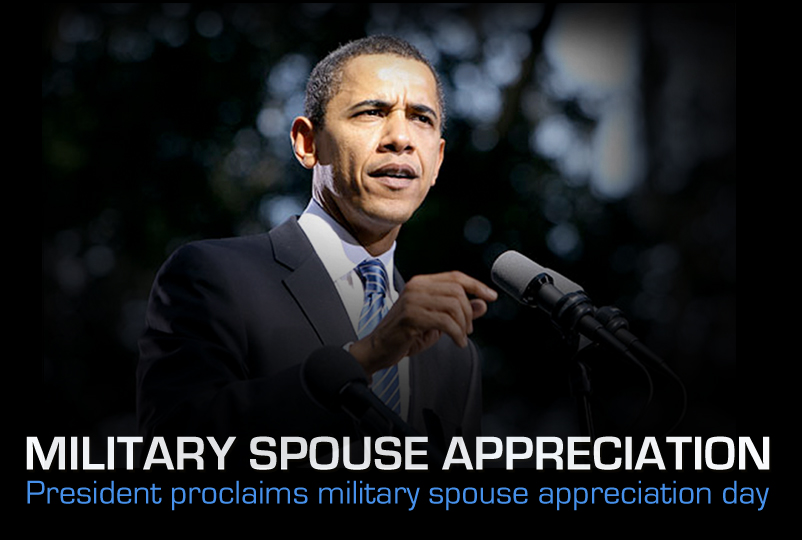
Military Spouse Appreciation